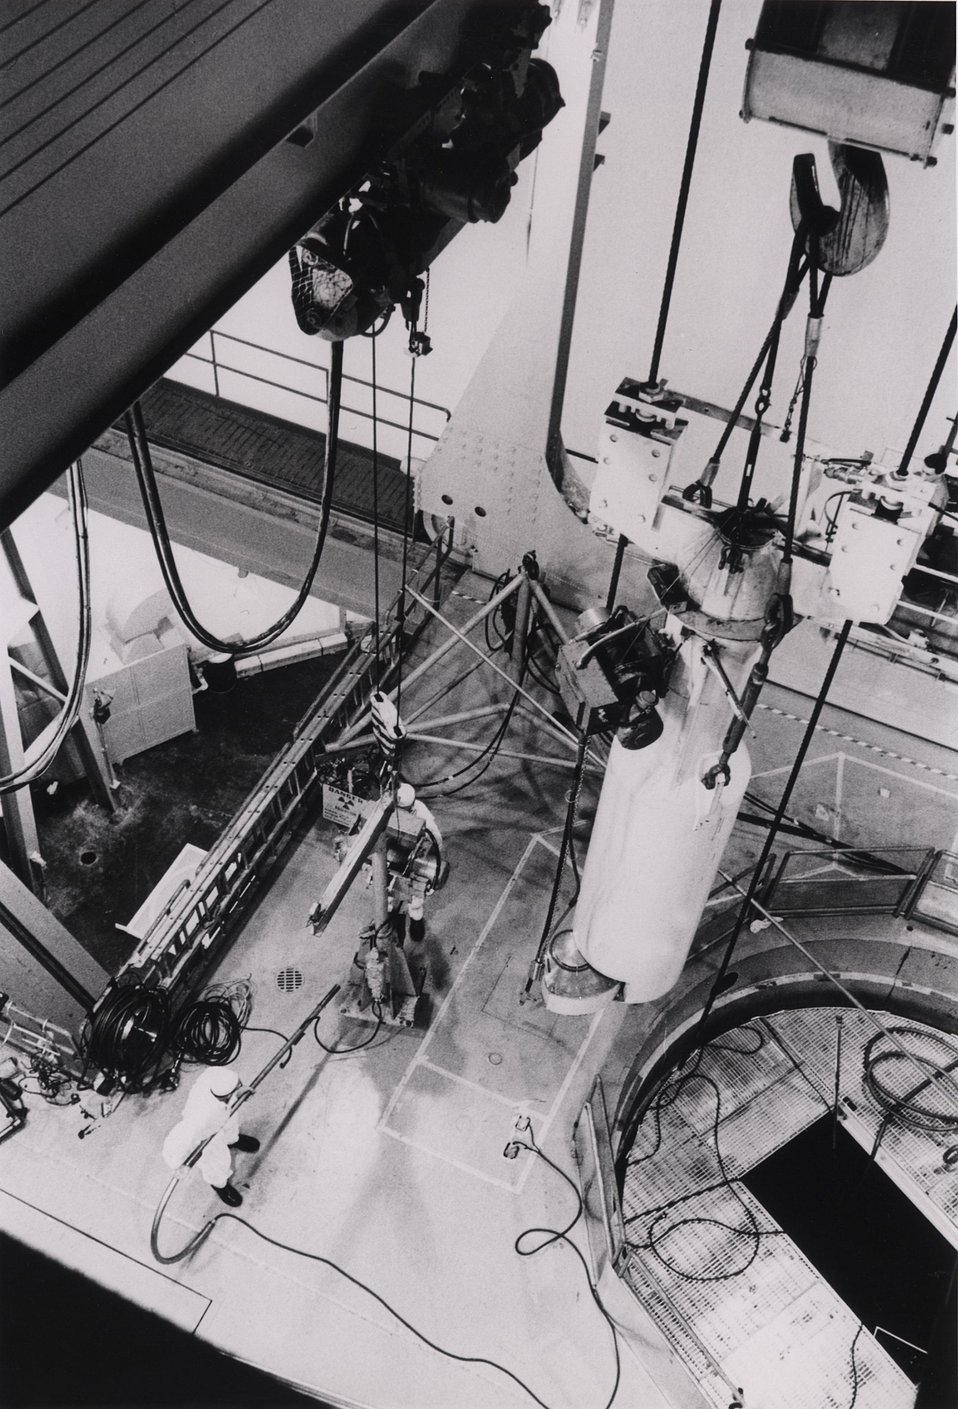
Big Rock Point Nuclear electric generating station at Charlevoix, MI.